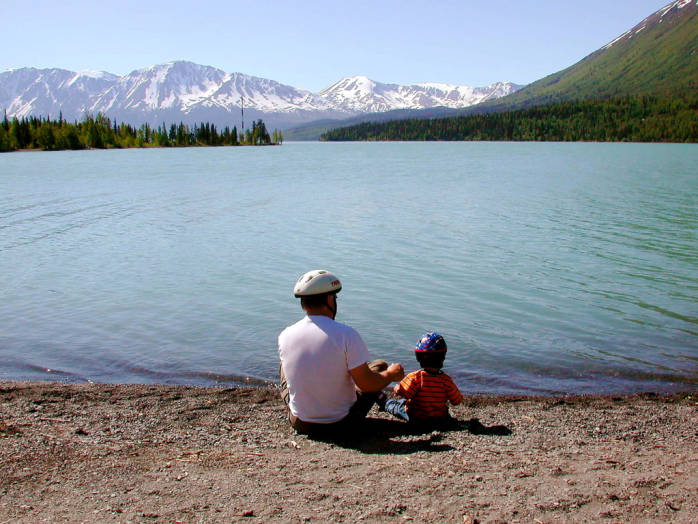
Father's Day at Kenai National Wildlife Refuge